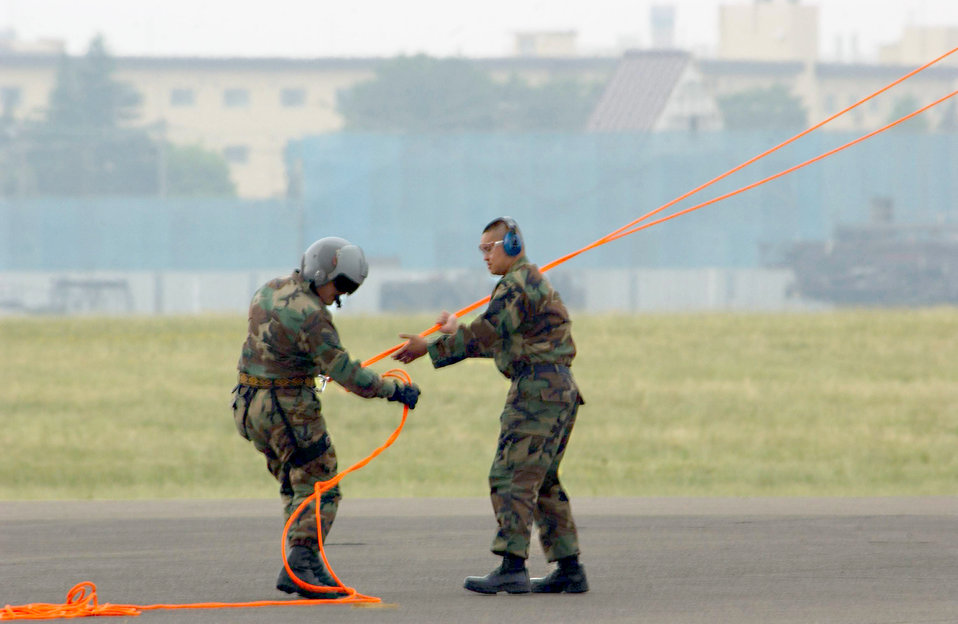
Rapelling training

YOKOTA AIR BASE, Japan (AFPN) -- Staff Sgt. Calvin Warner (right) assists Staff Sgt. David Jewell during rappelling training on the flightline here. Warner is a life support specialist, and Jewell is a survival, evasion, resistance and escape instructor. Both airmen are from the 374th Operation Support Squadron here. The purpose of the training was to expand the mission capabilities and increase training opportunities for 459th Airlift Squadron helicopter crews here.